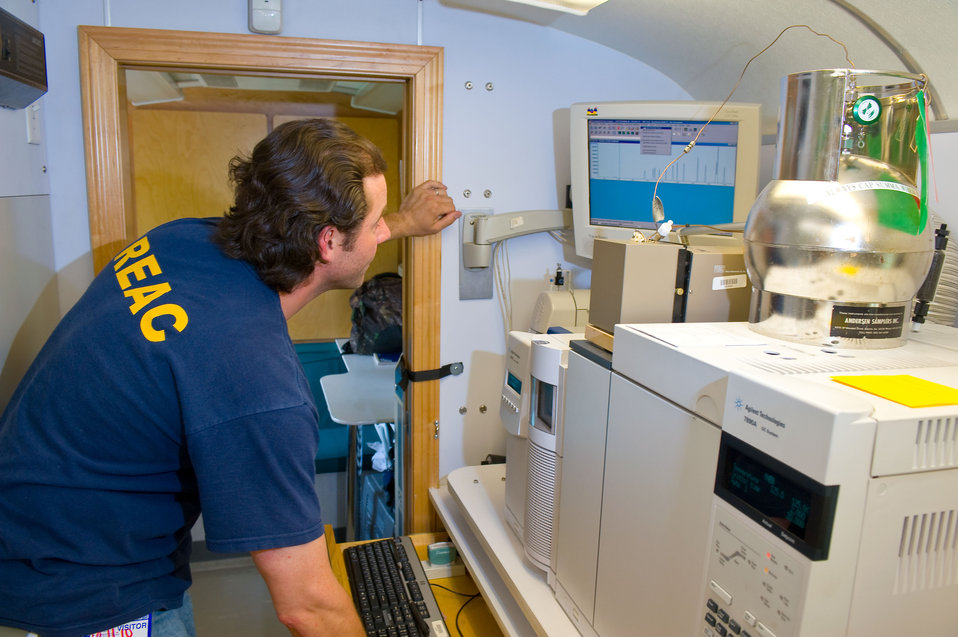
June 3, Analyzing data in a mobile lab, Dauphin Island, Ala